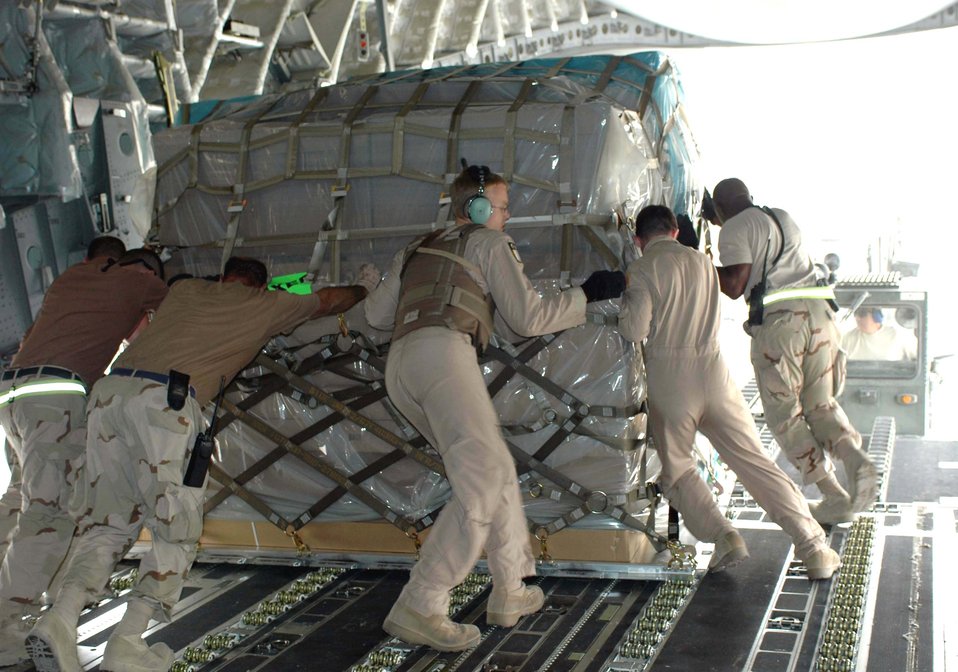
Global missions all in a day's work

Airmen from Detachment 1 of the 817th Expeditionary Airlift Squadron at Manas Air Base, Kyrgyzstan, and the 455th Air Expeditionary Wing at Bagram Air Base, Afghanistan, off-load cargo from a C-17 Globemaster III at Bagram on Aug. 8.